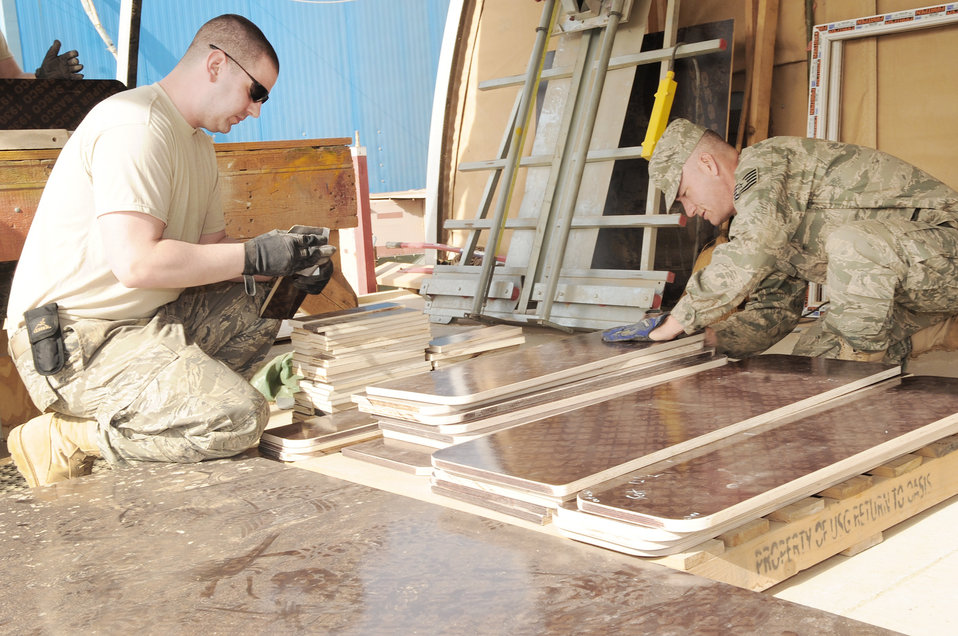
Kirkuk Airmen build desks for Iraqi children

Volunteers from the 506th Expeditionary Civil Engineer Squadron sand down pieces of wood during assembly of school desks for local Iraqi children March 6, 2010, at Kirkuk Regional Air Base, Iraq.